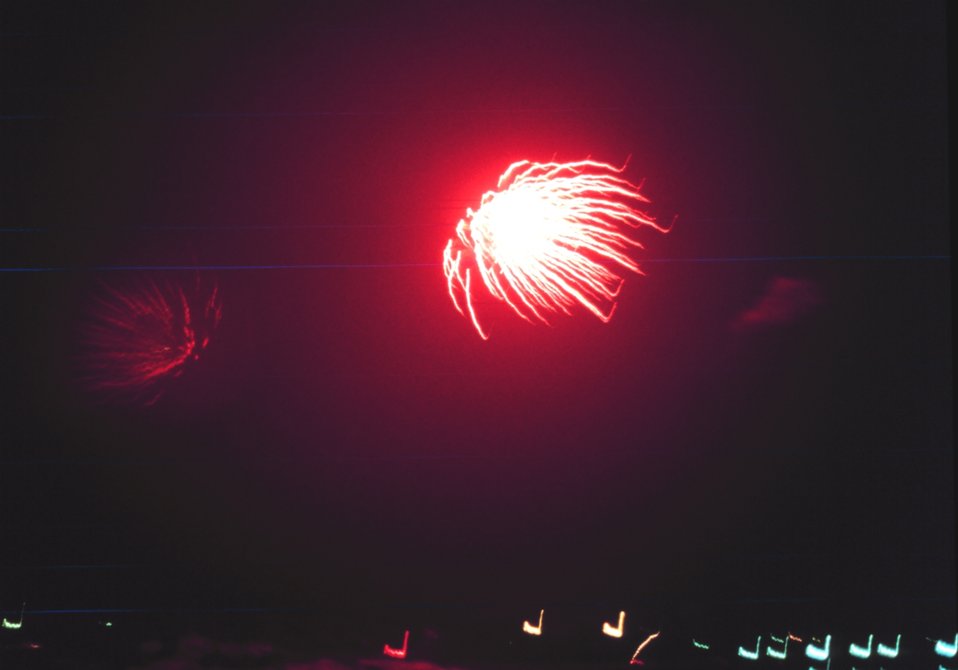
4th of July fireworks at Gloucester.